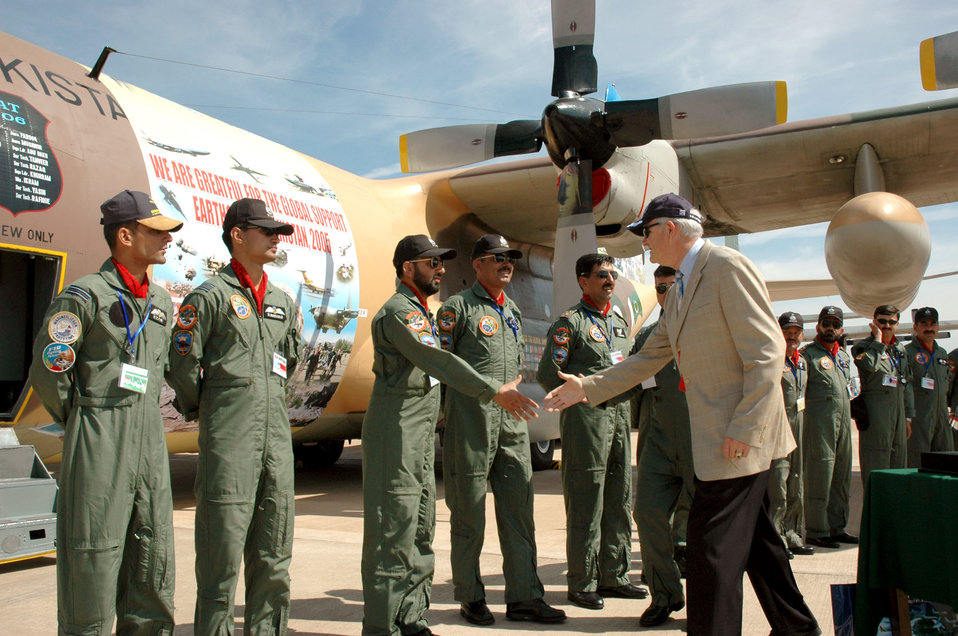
Pakistani Airmen personalize global thanks for support

Secretary of the Air Force Michael W. Wynne greets members of the Pakistan Air Force during his visit to the Royal International Air Tattoo in England. The Pakistani airmen used the air show as an opportunity to say